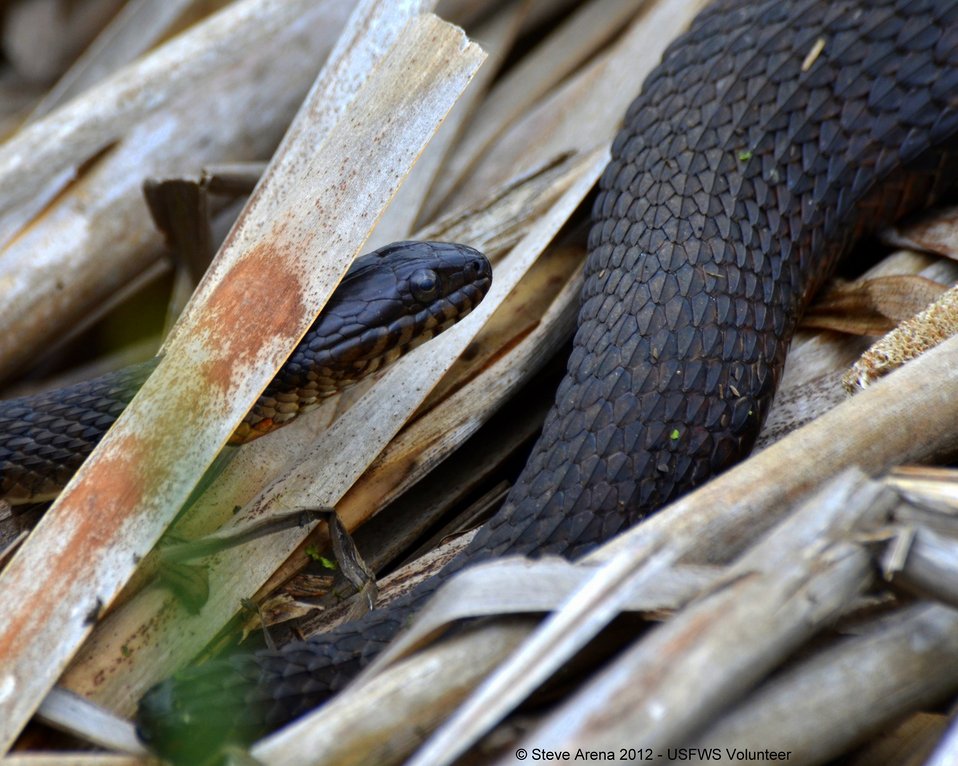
Young Northern Water Snake (Nerodia sipedon) along the dike 06 May 2012

Northern water snake at Great Meadows National Wildlife Refuge.